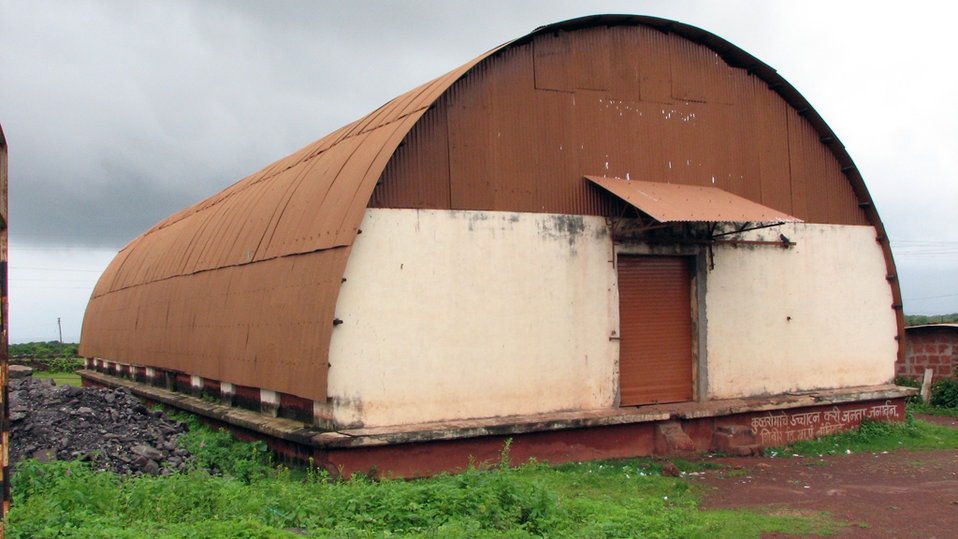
Godown at the time of British